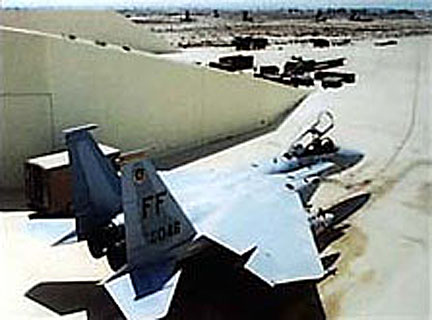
F-15C Eagles

A then-1st Tactical Fighter Wing F-15C Eagle sits on a deployed flightline between mission. F-15Cs from the 1st Fighter Wing began flying combat air patrols within hours of deploying to Saudi Arabia on Aug. 7, 1990, in support of Operation Desert Shield. The 1st FW received the first operational F-15C Eagles this week in 1981.